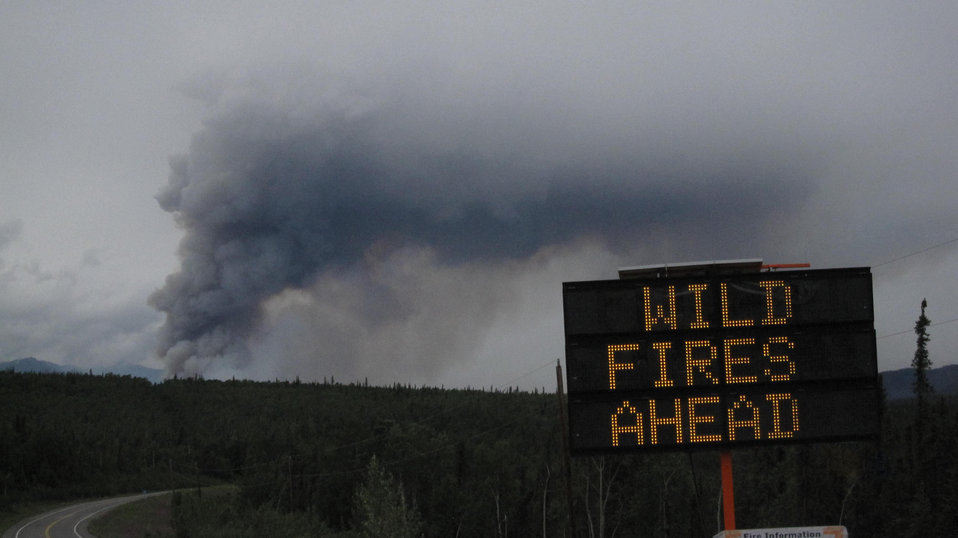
An electronic sign warns people about Wild Fires in Nevada area. The Moon Lake Complex Fires consists of 2 fires, Moon Lake Fire and Tetlin Junction Ridge Fire, along the Alaska and Taylor Highways near Tok, AK. Lightning strikes on Jun. 25, 2013 caused the fires, which have consumed over 49, 959 acres.